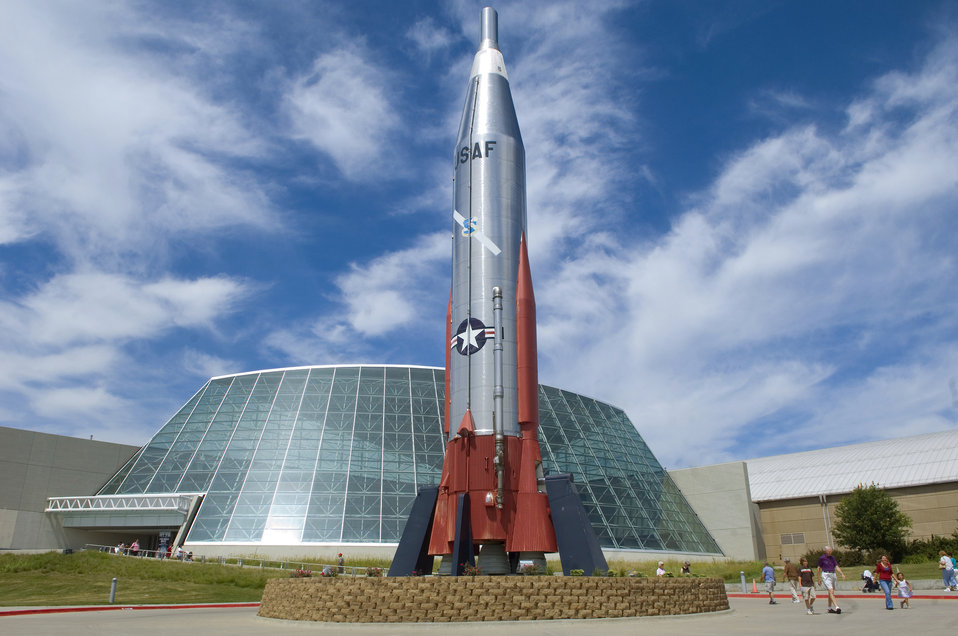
Air Force Week mixes past, present, future at museum

Strategic Air and Space Museum officials hosted an entire day dedicated to the legacy of airpower providing special Air Force demonstrations and displays during Air Force Week in the Heartland Aug. 13 in Ashland, Neb. The museum is a 300,000-square-foot facility promoting education in aviation and aerospace topics.